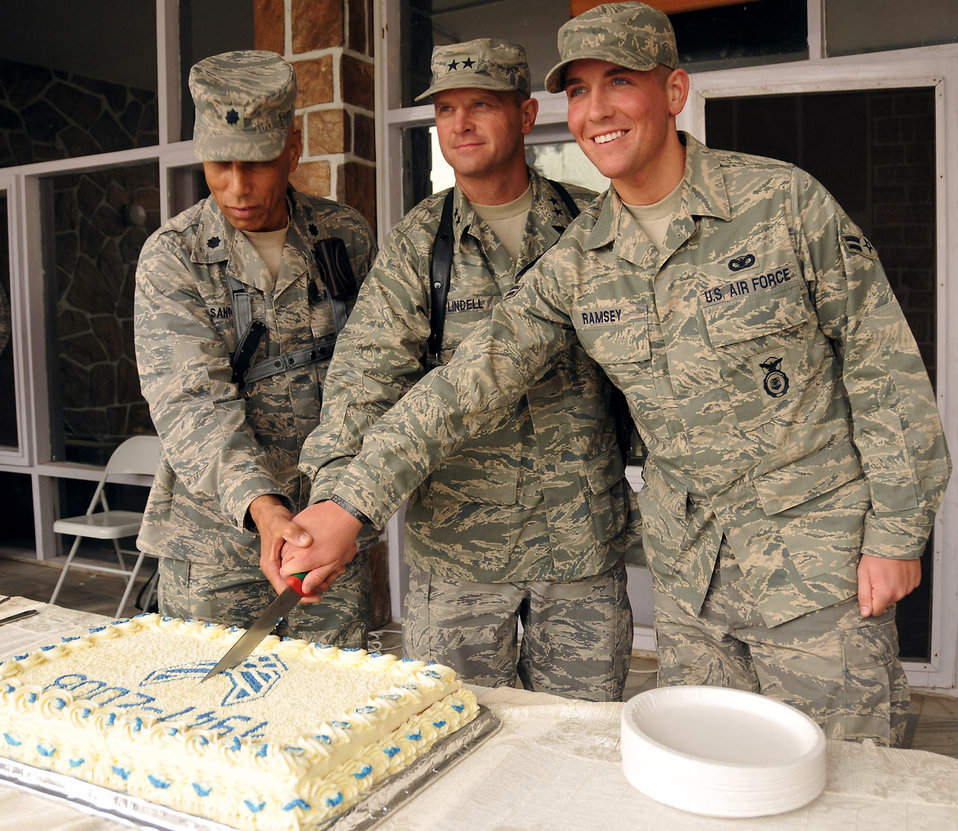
Servicemembers in Afghanistan honor Air Force birthday

Lt. Col. Mathies Santos (from left to right), Maj. Gen. Jay H. Lindell and Airman 1st Class Jordan Ramsey cut the traditional birthday cake during a ceremony for the Air Force's 61st anniversary Sept. 18 at Kabul, Afghanistan. Colonel Santos is a Reserve Airman deployed from Quonset Point, R.I., General Lindell is the Combined Air Power Transition Force commanding general, and Airman Ramsey is a security forces airman deployed from Eglin Air Force Base, Fla.